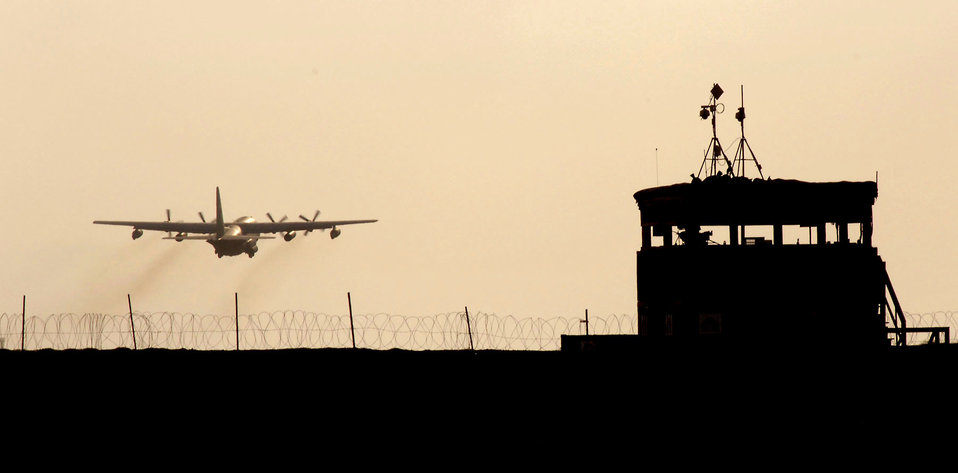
Heading down range

An HC-130P takes off from Camp Lemonier, Djibouti, headed down range in support of a Combined Joint Task Force-Horn of Africa mission. Task force personnel are providing medical, humanitarian and nation-building efforts in the region.